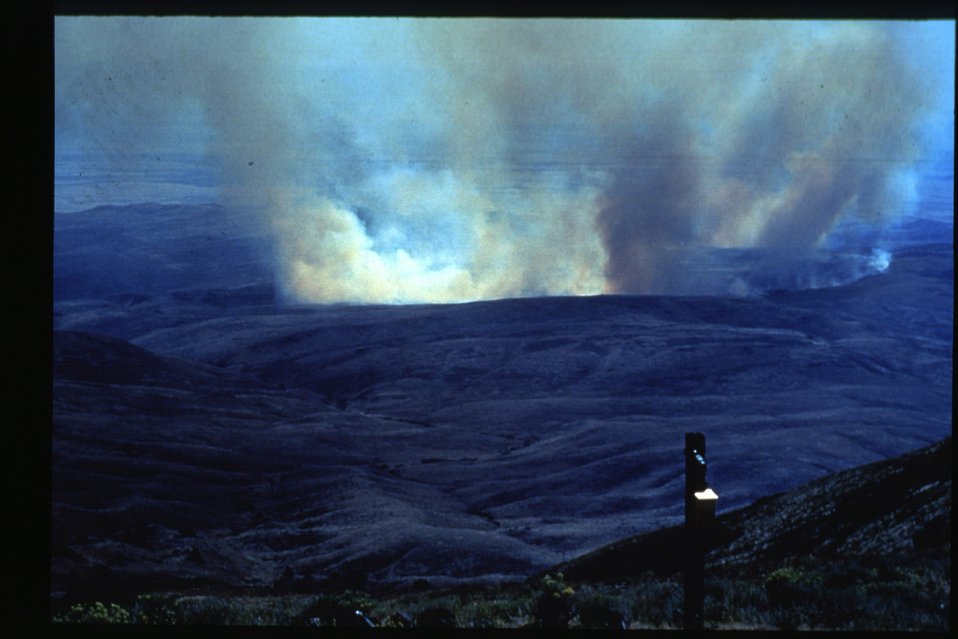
Boise Foothills Fire Danskin Mountains and South Fork of Boise River Four River Field Office LSRD Lower Snake River District